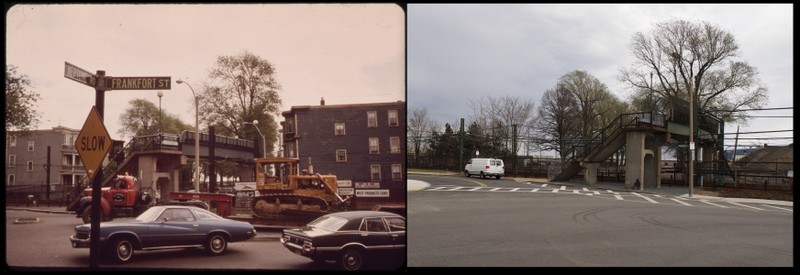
East Boston, MA 1973 and 2012 by Michael P. Manheim

Then & Now photographs contributed by former Documerica photographer Michael Philip Manheim.

Full Documerica set by Manheim